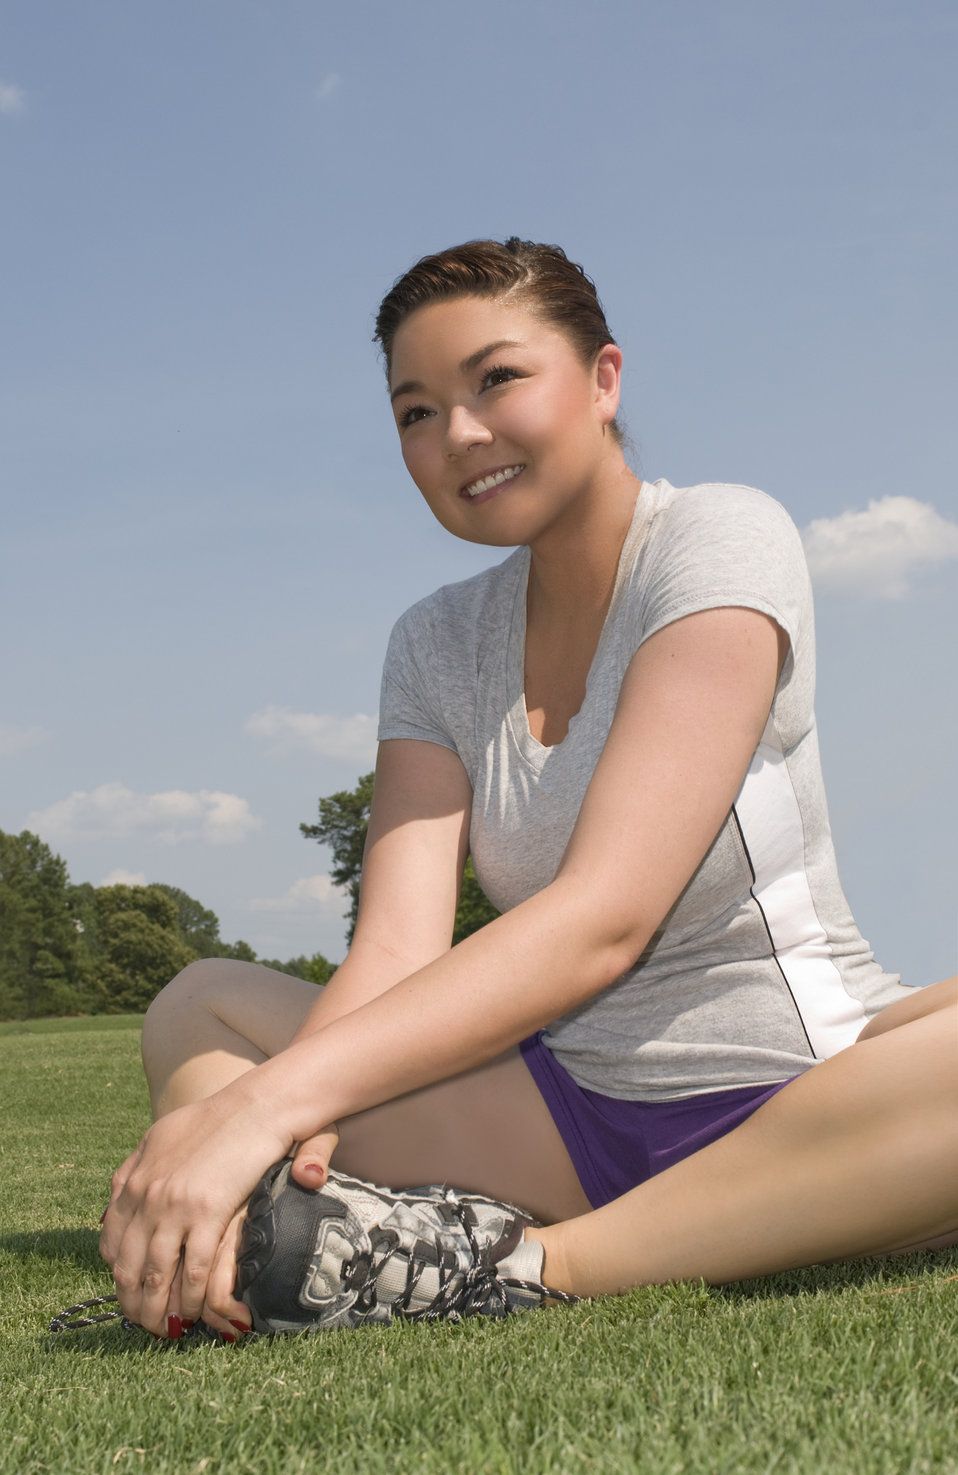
Photographed at a Georgia track field, this young woman was in the process of warming up prior to participating in some 'vigorous-intensity aerobic activity' on this sunny day. She was shown here stretching her inner thigh and groin muscles in order to avoid the possibility of a muscle strain-related injury during her exercise routine. Hopefully, she'd applied sunscreen to her sun-exposed skin prior to arriving at the running track, and had packed some fresh drinking water for the purpose of rehydration.